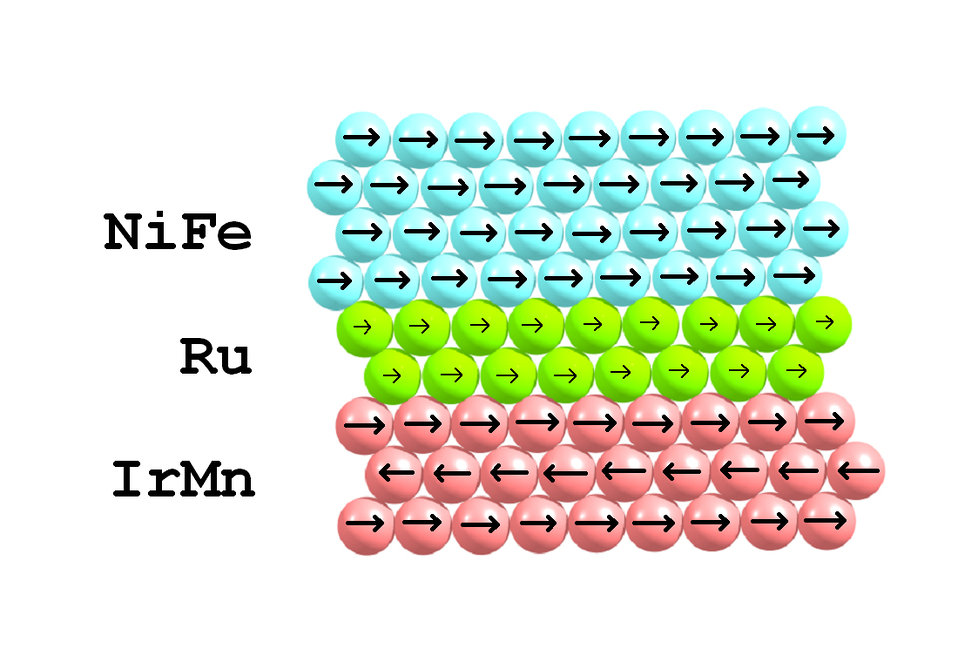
Nano-layer of Ruthenium Stabilizes Magnetic Sensors

A thin layer of ruthenium (green in the cartoon) improves magnetic sensors by modulating interactions between a nickel/iron film (blue) that responds to external magnetic fields and an iridium/manganese stabilizer film (pink). The ruthenium aligns its electron spins, indicated by arrows, with the nearest layers in both films.